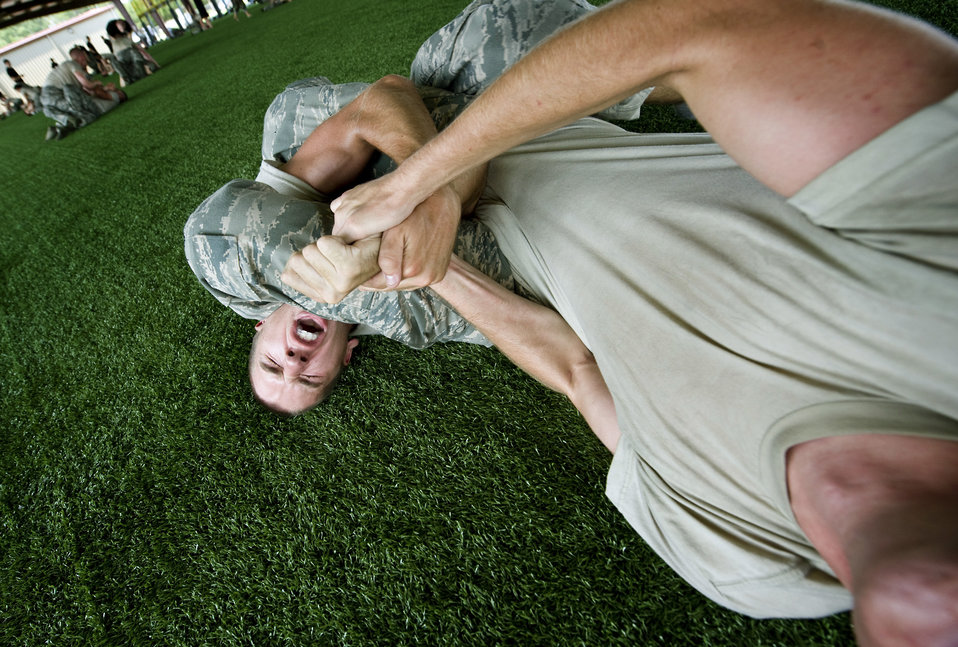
Instructors teach ROTC cadets defense techniques

An ROTC cadet attempts to defend another cadet's arm bar during combative training at Maxwell Air Force Base, Ala., July 22, 2010. The cadets are sent through month-long summer camp which prepares them to become the future leaders of tomorrow's Air Force.